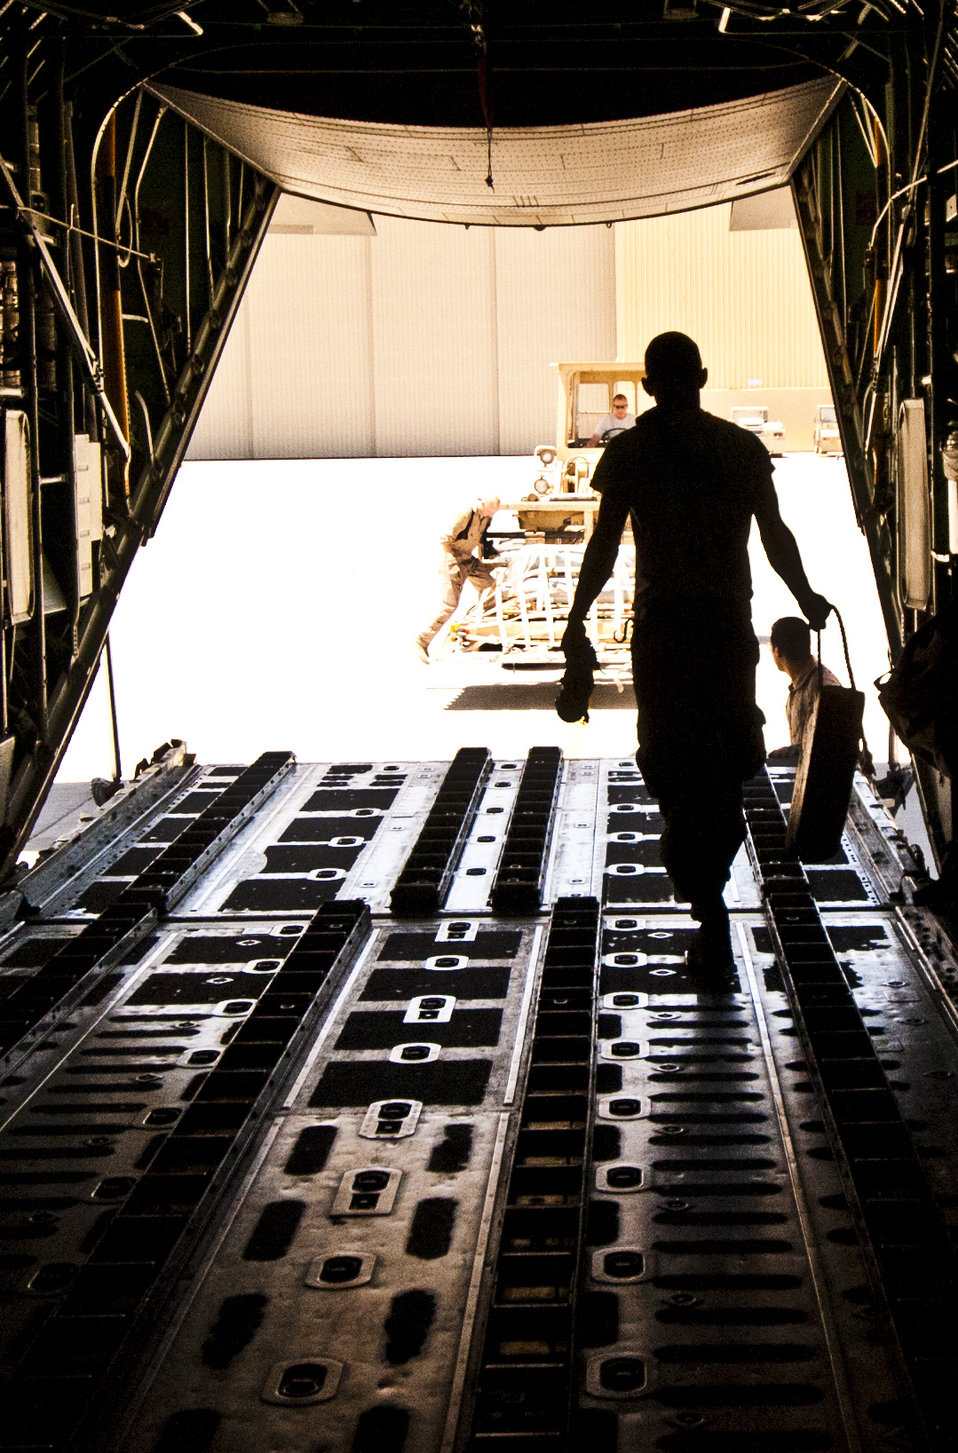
Hercules: A day in the life

Airmen with the 455th Air Expeditionary Wing prepare a C-130H Hercules assigned to the 774th Expeditionary Airlift Squadron for an airlift mission at Bagram Airfield, Afghanistan, June 2, 2012. Bagram Airfield provides tactical airlift support every day to ground forces operating in Afghanistan.